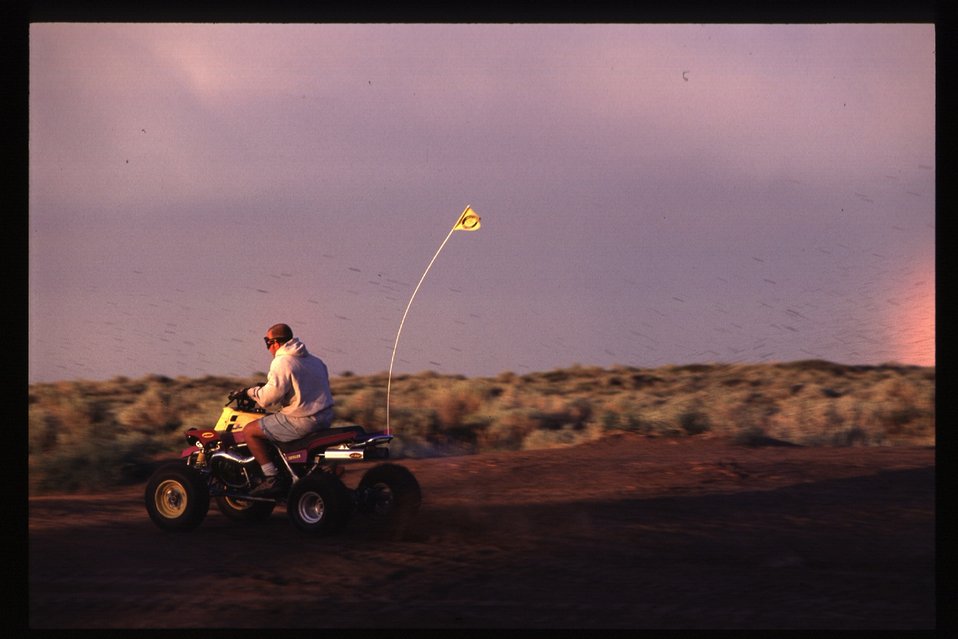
Recreation St Anthony Sand Dunes Off Highway Vehicles Idaho Falls Field Office USRD Upper Snake River District